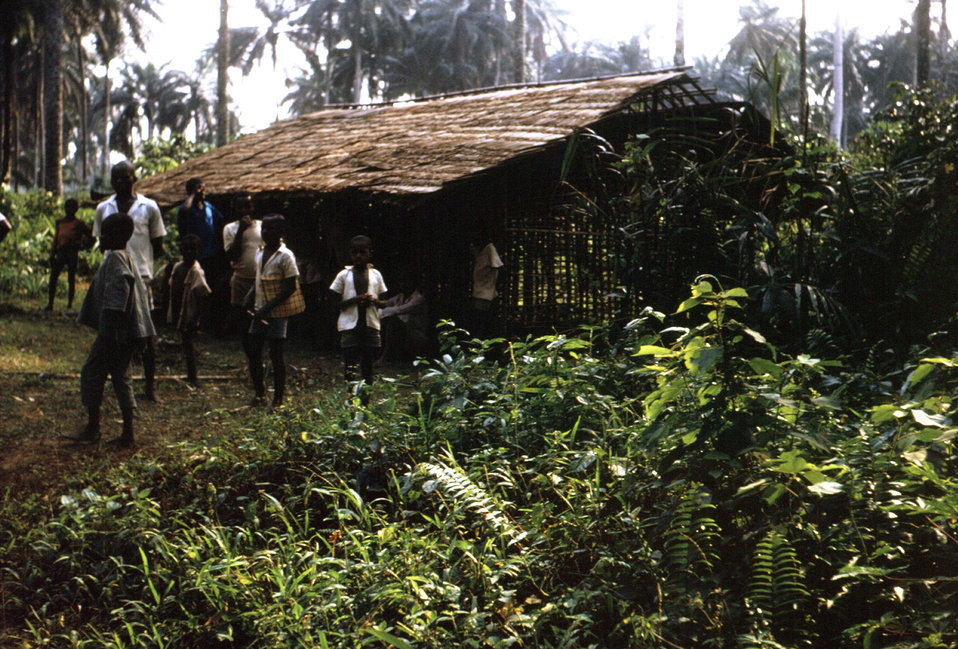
This 1968 photograph showed individuals who were outside of a typical eastern Nigerian house, and was taken during the Nigerian-Biafran civil war in the late 1960s.